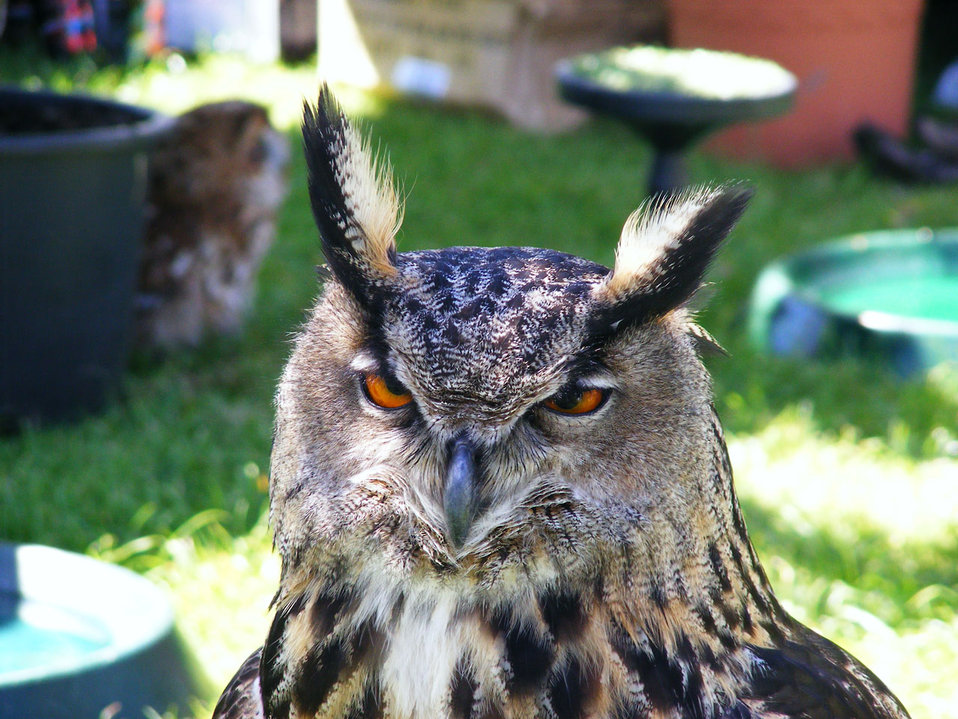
Who's a pretty boy then?

Tame owl at showground.